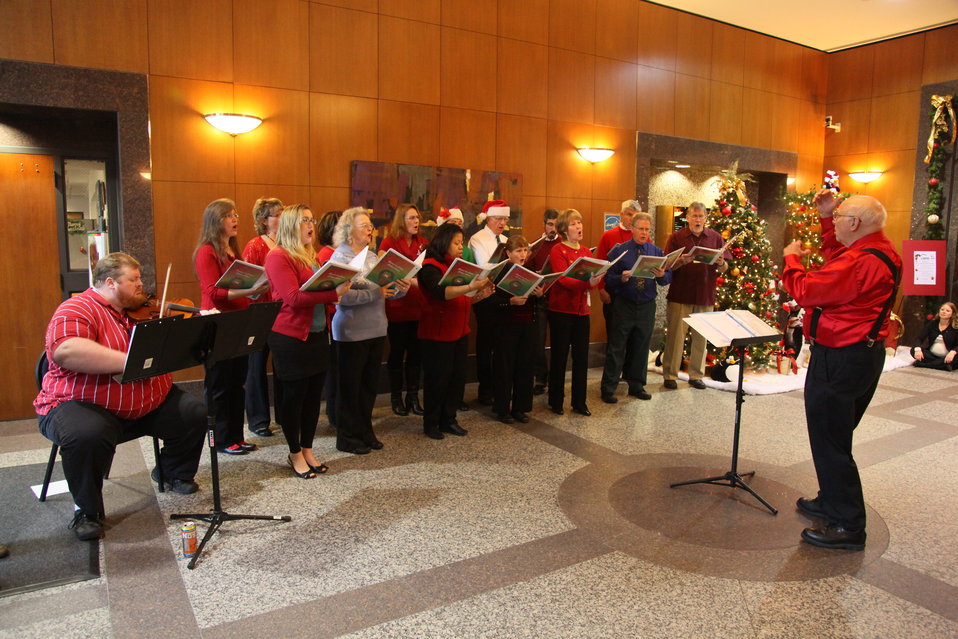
A Sacramento spirited performance by the Corps-Aliers

Bob Fletcher (right), engineer technician, helps conduct the Corps-Aliers performance at the U.S. Army Corps of Engineers Sacramento District headquarters building in Sacramento, Calif., Dec. 15, 2011. The all-volunteer group of singers from the district gave a spirited performance earlier this week at the California State Capitol Rotunda. The group is scheduled to perform Dec. 16 at the annual district holiday party.